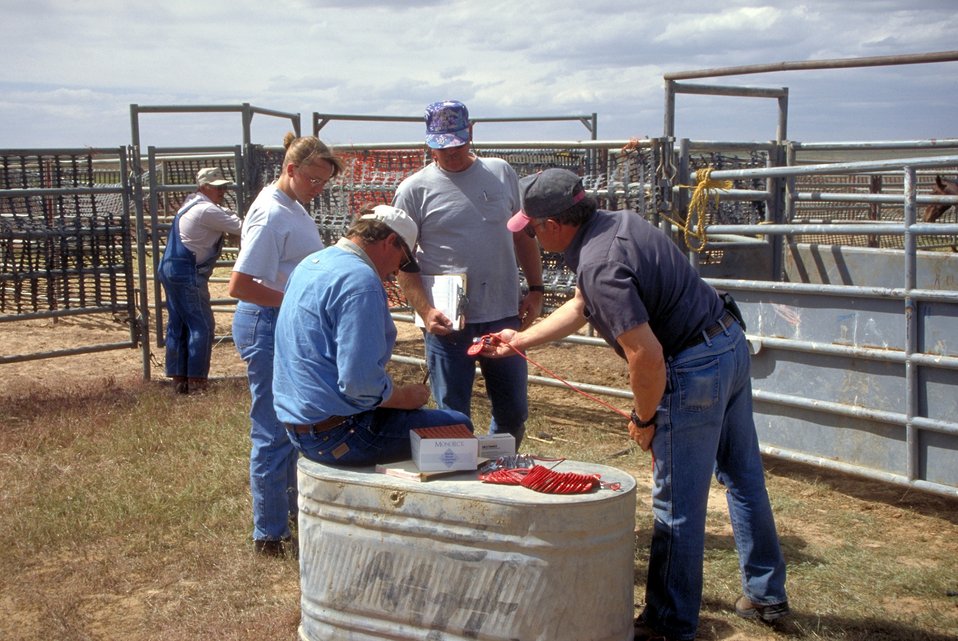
EIA testing near Vernal, Utah.